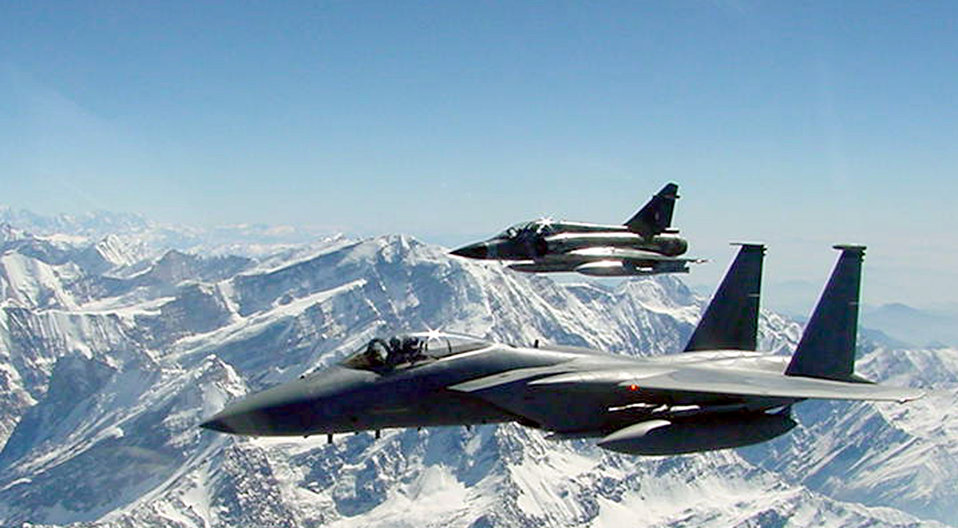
Cope India in full force

OVER INDIA -- An F-15 Eagle and an Indian air force Mirage 2000 fly together over the Himalayas during Cope India '04, the first dissimilar air combat training exercise between the two air forces in more than 40 years. The 10-day exercise ended Feb 25.